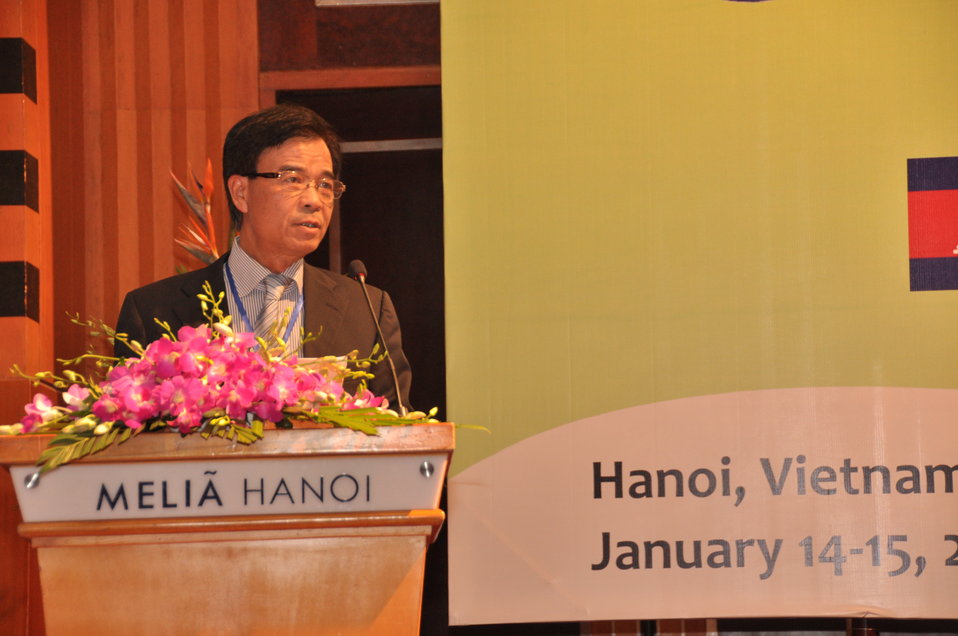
Vietnam's Deputy Transport Minister Truong Van Vien addresses the Lower Mekong Initiative Infrastructure Best Practices Exchange in Hanoi

Hanoi: January 14, 2013